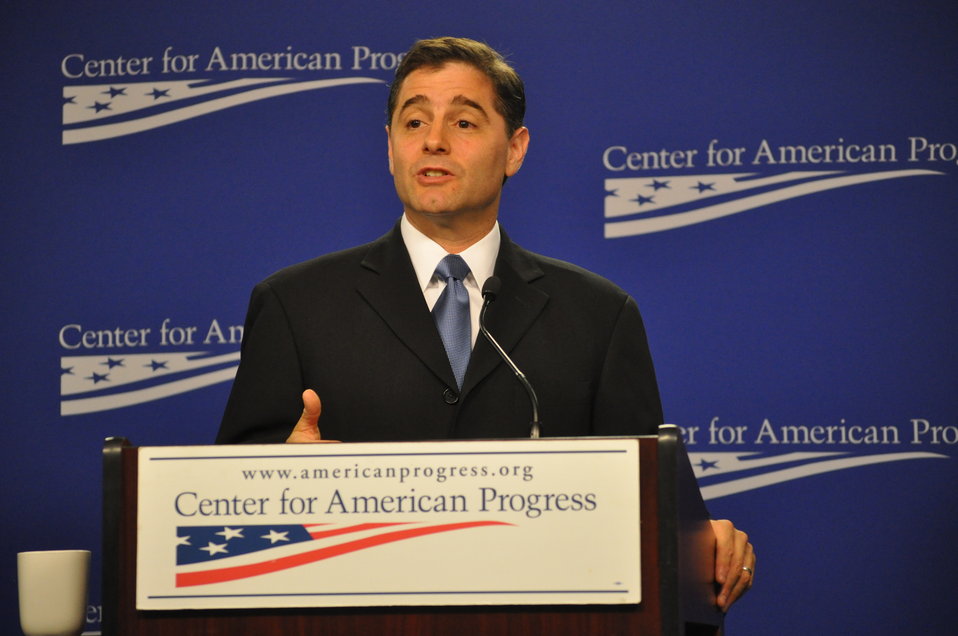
'Cramming' and Mystery Fees Event

Julius Genachowski, Chairman, Federal Communications Commission